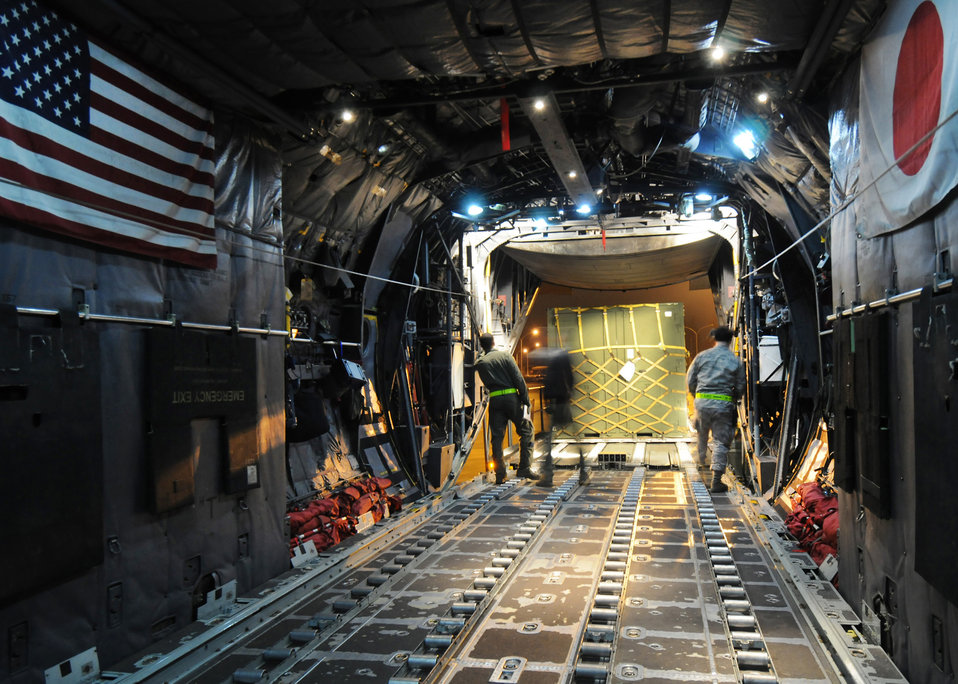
Bringing in the load

Members of the 36th Airlift Squadron and 730th Air Mobility Squadron guide a pallet into the cargo compartment of a C-130 Hercules during Phase I of Exercise Beverly Morning 09-03 March 31 at Yokota Air Base, Japan. Base personnel will be conducting the exercise March 30 through April 3 to maintain operational readiness.